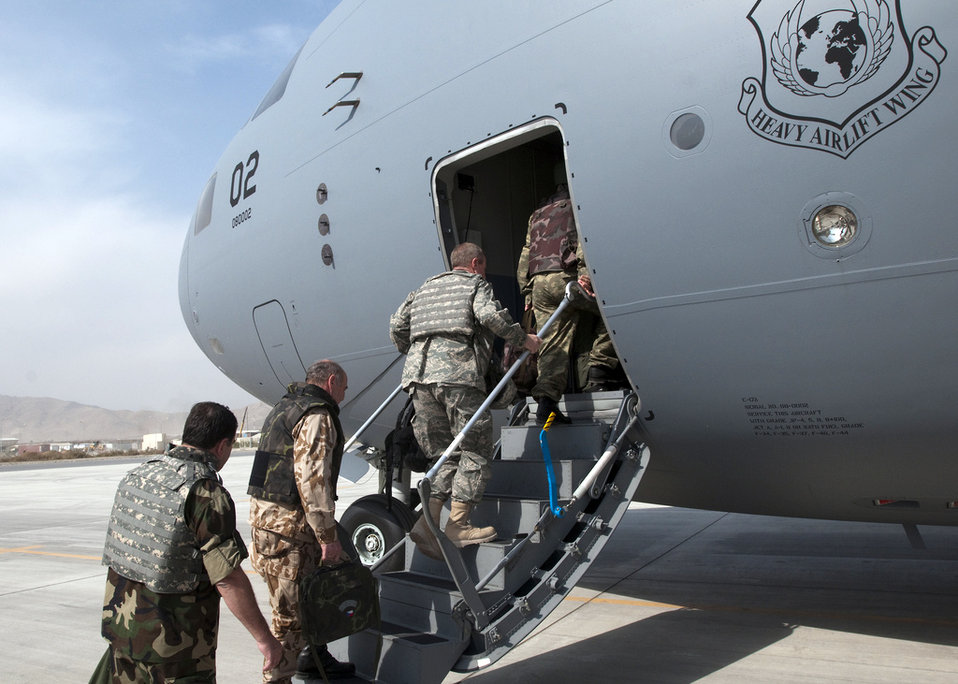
Multinational Strategic Airlift Capability supports NATO committee visit to Afghanistan

Members of the NATO International Military Committee board a C-17 Globemaster III from the multinational Heavy Airlift Wing at Papa Air Base, Hungary. The newly formed HAW, flew one of its three C-17 Globemaster IIIs into Kabul, Afghanistan, with military representatives from all 28 NATO member states as well as those from the 14 non-NATO nations who also contribute forces to ISAF. The consortium includes NATO member nations Bulgaria, Estonia, Hungary, Lithuania, the Netherlands, Norway, Poland, Romania, Slovenia and the U.S., as well as Partnership for Peace nations Finland and Sweden.